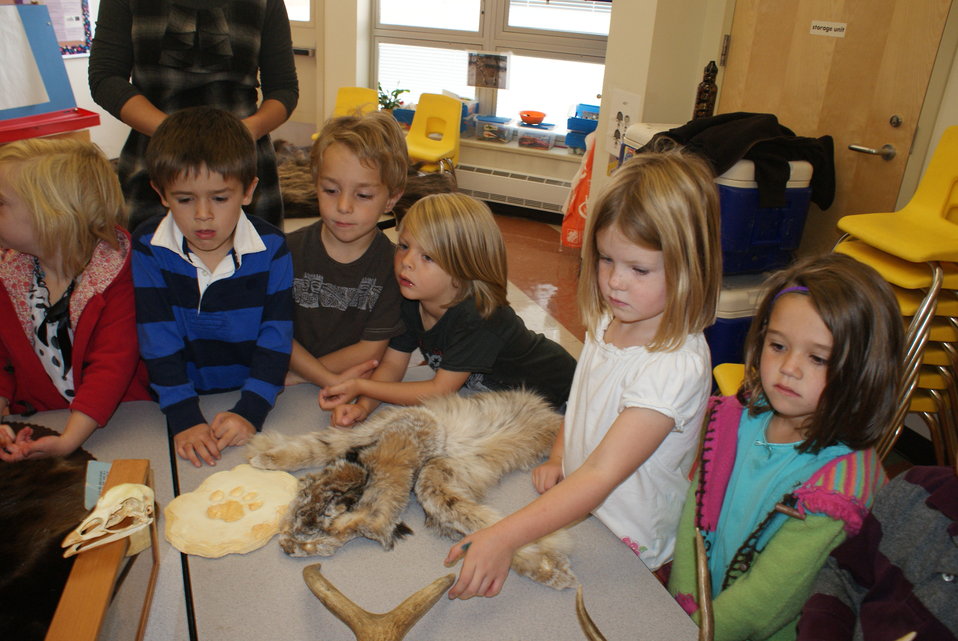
Scientists in the Community Program

U.S. Fish and Wildlife Service Mountain-Prairie Region Deputy ARD for External Affairs, Matt Kales, introduces early childhood education students at William Roberts Elementary School in Denver to some of Colorado's native and historic wildlife species.